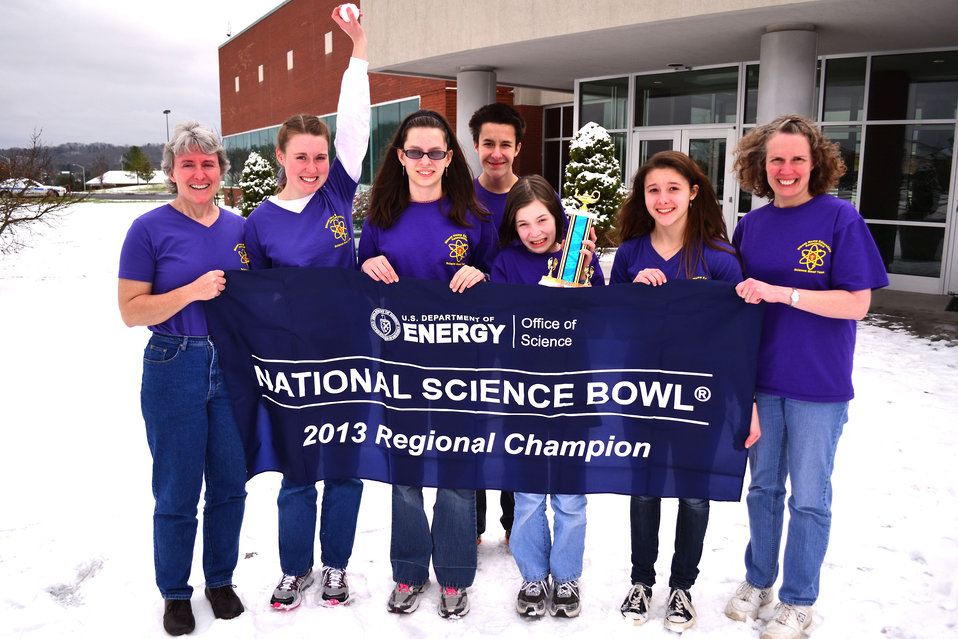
Blount Home Educational Association First Place DOE Tennessee Middle School Science Bowl Oak Ridge

13-008 DOE photo Lynn Freeny DOE Tennessee Middle School Scence Bowl 2-2-2013 Oak Ridge Tennessee